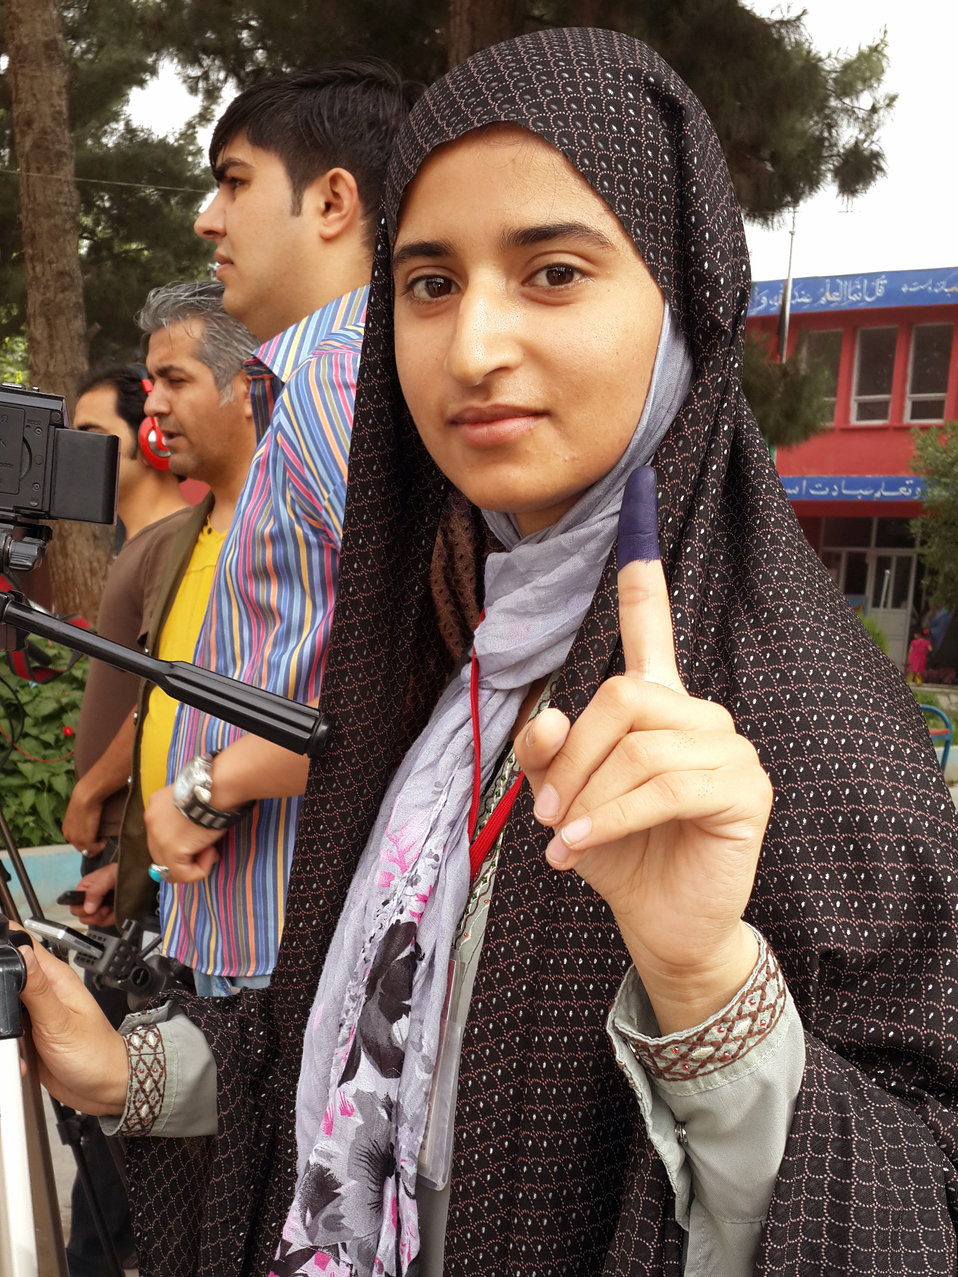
A female journalist displays her inked finger after casting her vote in Afghanistan’s western Herat province.